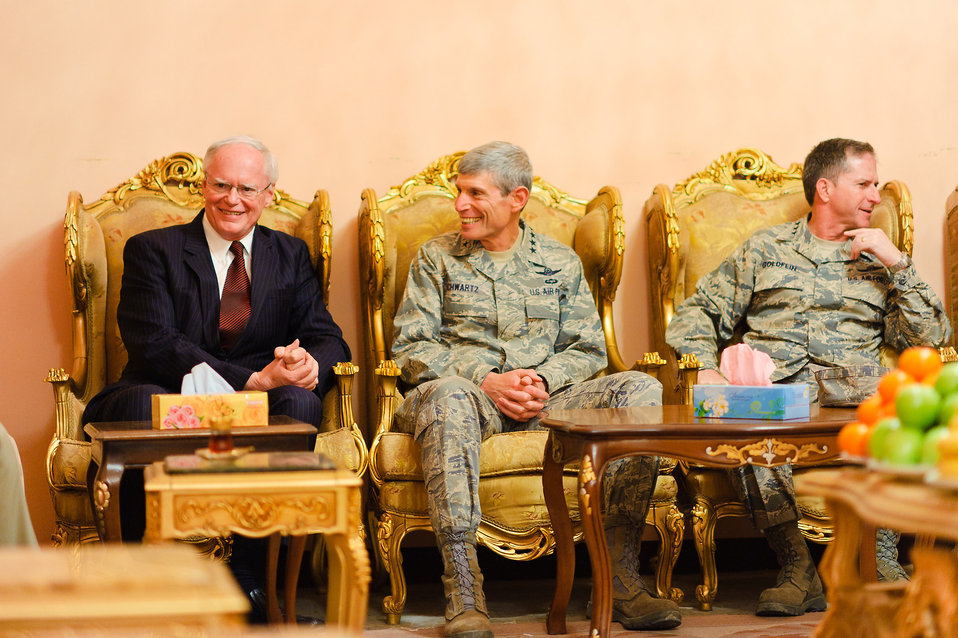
CSAF visits Airmen in Iraq

Air Force Chief of Staff Gen. Norton Schwartz enjoys a discussion with U.S. Ambassador to Iraq James Jeffrey (left), Nov. 17, 2011, in Baghdad, Iraq. To Schwartz’s left is U.S. Air Forces Central Command Commander Lt. Gen. David Goldfein. Schwartz visited Airmen throughout the U.S. Central Command area of responsibility in conjunction with attending the Dubai International Air Chiefs Conference. During his trip to Iraq, Schwartz met with Airmen at Sather Air Base and FOB Union III, as well as with U.S. and Iraqi leaders.